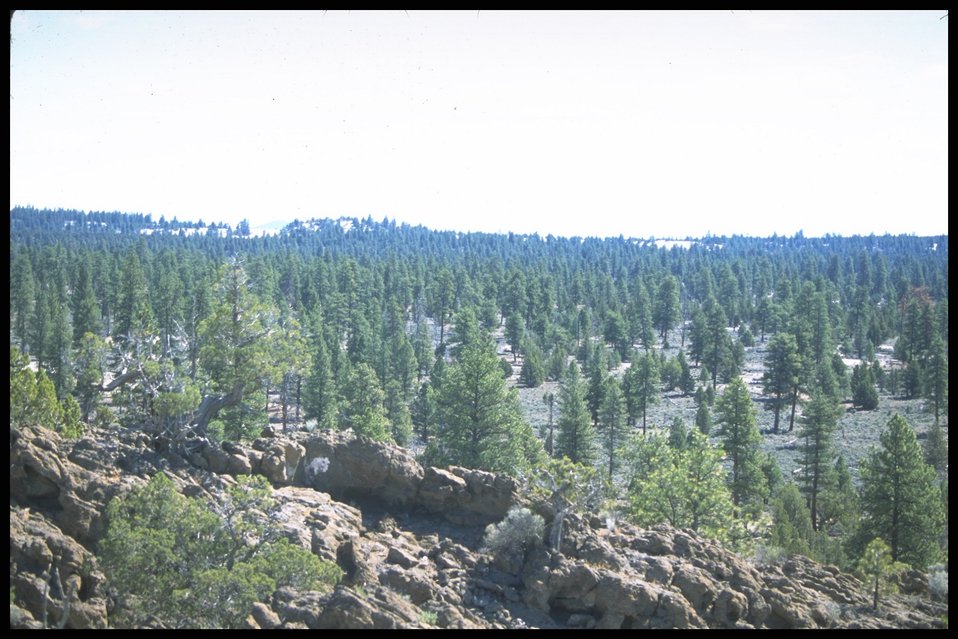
Lost Forest, Lakeview District.